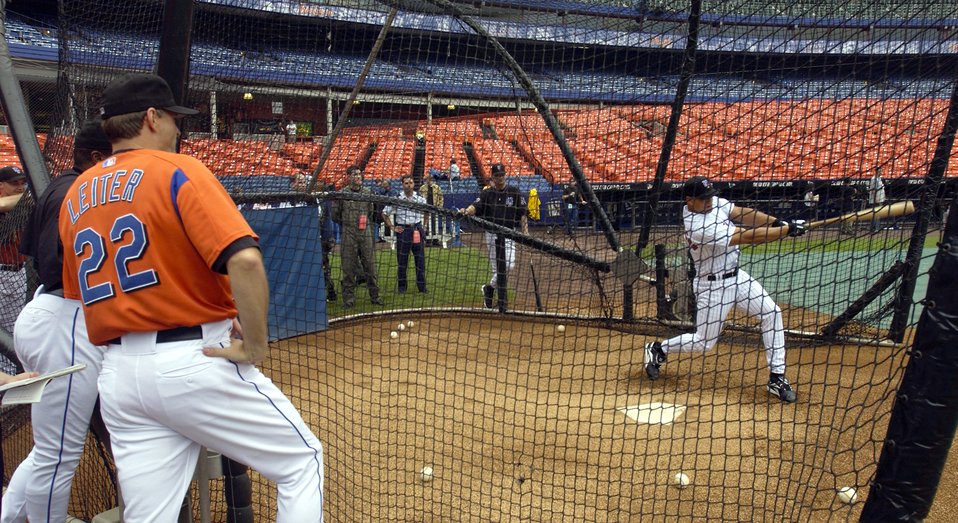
From Airman to Met

NEW YORK -- New York Mets pitcher Al Leiter watches Senior Airman Chardo Richardson takes a cut at a ball in batting practice with the New York Mets here June 22. Airman Richardson was at Shea Stadium for the second part of a job swap with Mr. Leiter. The Mets pitcher was a boom operator for a day at McGuire Air Force Base, N.J., on May 24. Airman Richardson is a boom operator with the 32nd Air Refueling Squadron at McGuire.